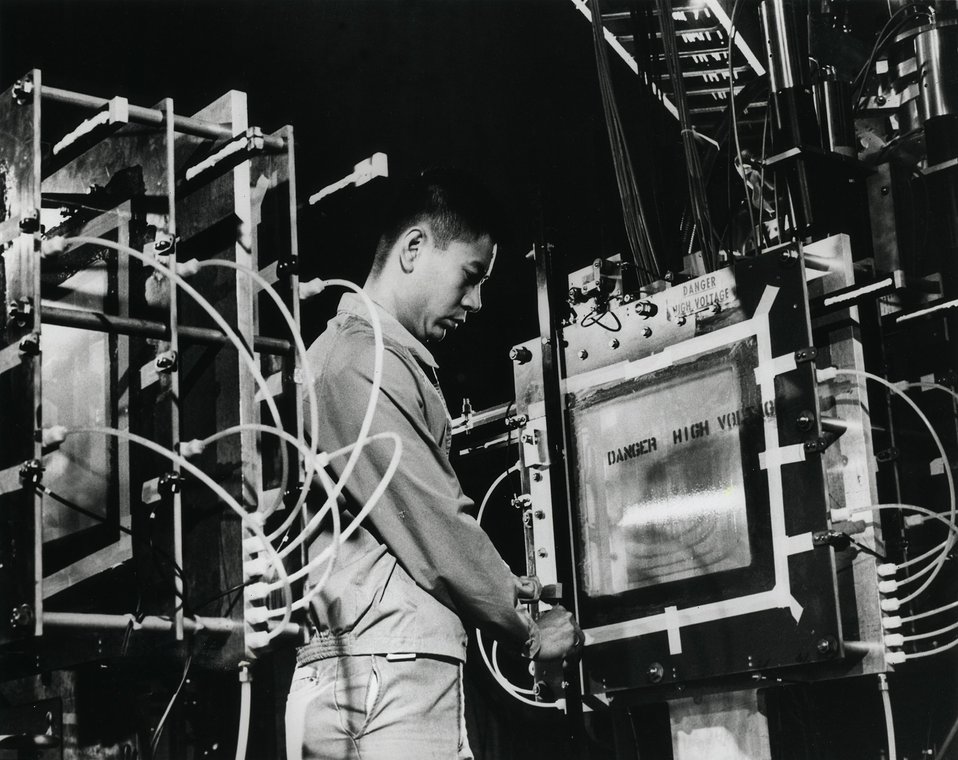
A spark is adjusted during a high energy physics experiment at Argonne's ZGS.